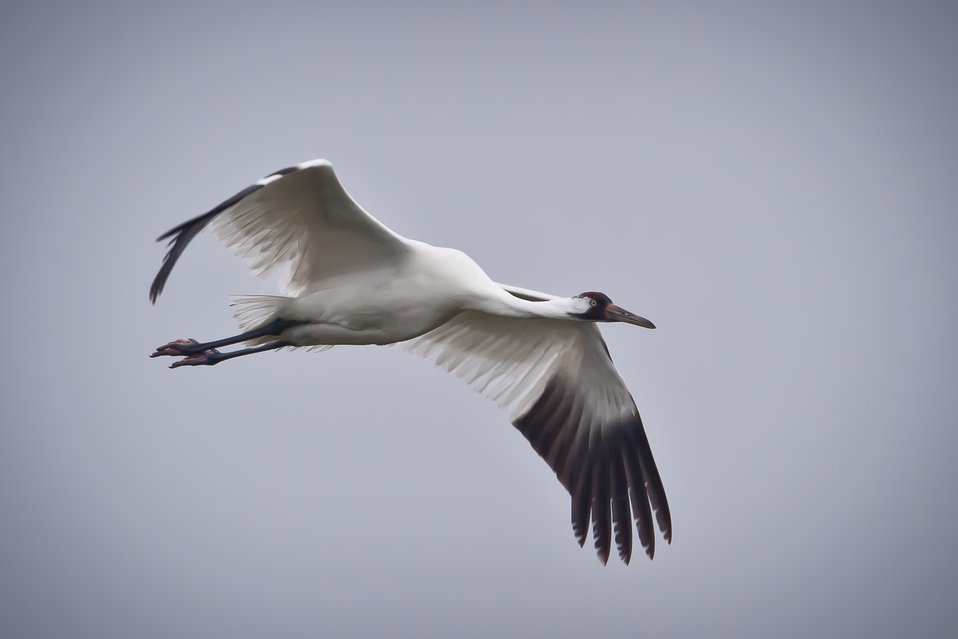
Whooping Crane in flight in Texas.